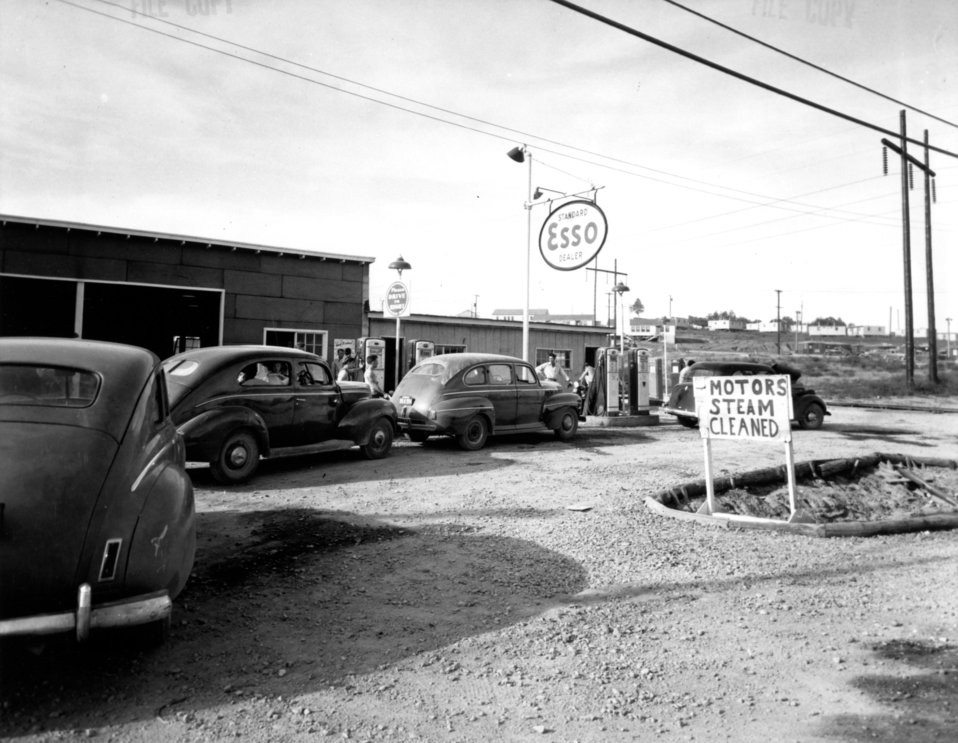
Business activity at Oak Ridge